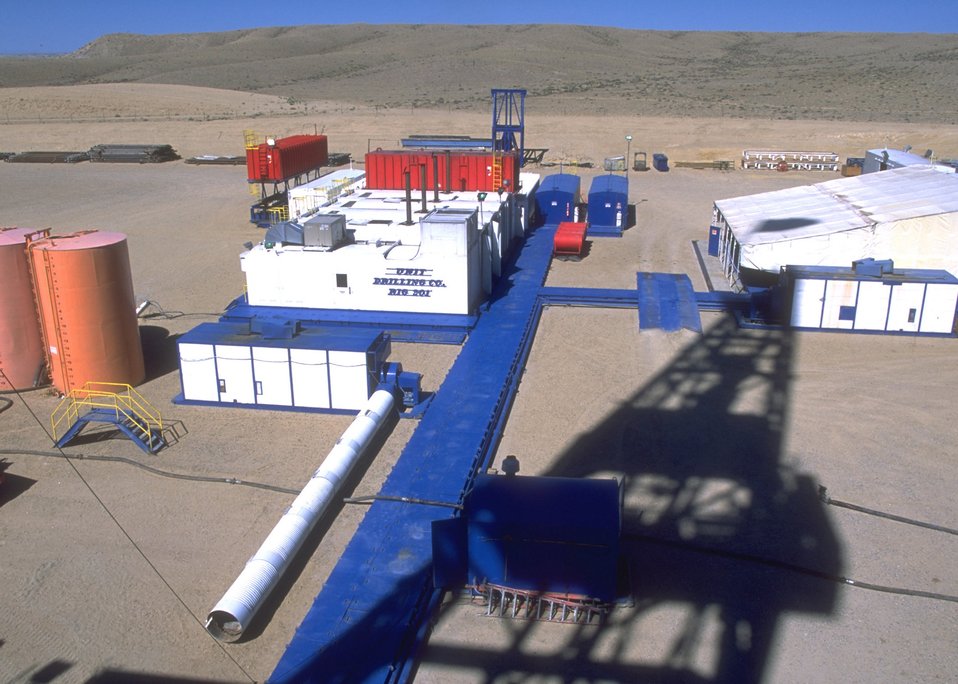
Supporting facilities on the Burlington Northern deep well rig, Casper Field Office.